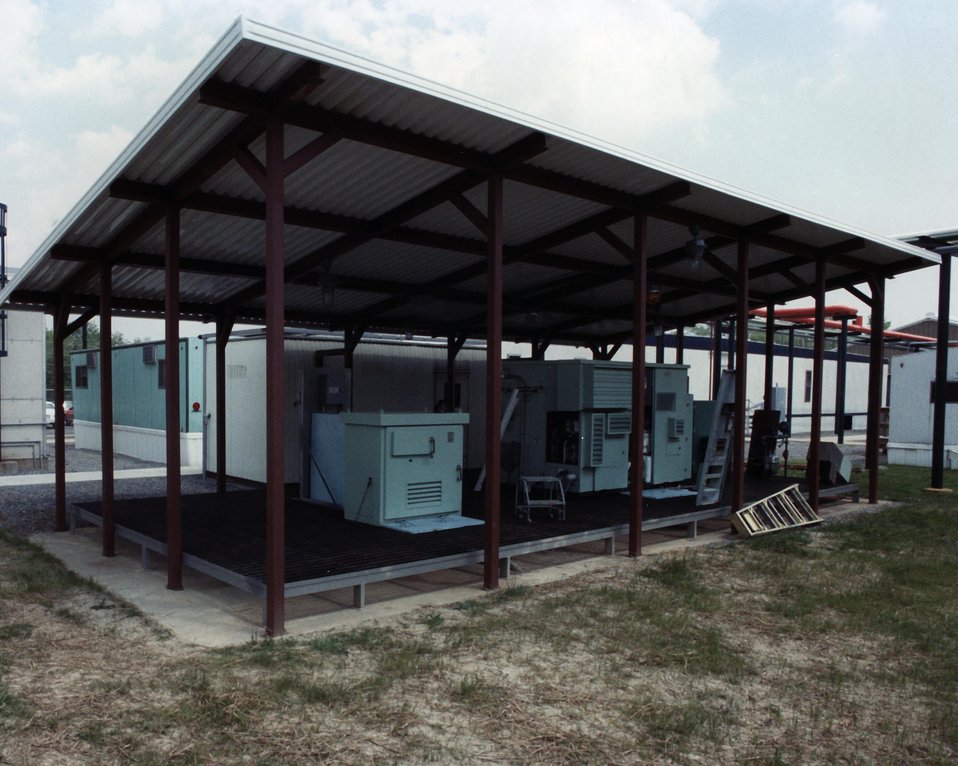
MORGAN TOWN FUEL CELL POWER UNIT.

THE NATIONAL ENERGY TECHNOLOGY LABORATORY IN WEST VIRGINIA HOUSES A DOE-SPONSORED FUEL CELL TEST UNIT. THE FUEL CELL UNIT IS ONE OF 46 NATURAL GAS-FIRED CELLS BUILT BY INTERNATIONAL FUEL CELLS CORP. THE TOOL-SHED SIZED POWER UNIT CAN PRODUCE UP TO 40 KILOWATTS OF ELECTRICITY. THE MORGANTOWN FUEL CELL UNIT OPERATES AS A 'COGENERATOR' OF BOTH HEAT AND ELECTRICITY. THE FUEL CELL CAN CONVERT NEARLY 80 PERCENT OF THE FUEL VALUE OF THE INCOMING NATURAL GAS INTO USABLE ENERGY - AN EFFICIENCY MORE THAN TWICE THAT OF A CONVENTIONAL COAL-BURNING PLANT. THE 11,000 POUND POWER PLANT IS OPERATED BY A STACK OF 270 INDIVIDUAL CELLS. EACH CELL USES AN ELECTROCHEMICAL PROCESS TO COMBINE HYDROGEN FROM THE NATURAL GAS WITH OXYGEN FROM THE AIR TO PRODUCE ELECTRICITY. STEAM IS PRODUCED AS A BYPRODUCT OF THE PROCESS. DIRECT CURRENT FROM THE POWER STATION IS CONVERTED INTO ALTERNATING CURRENT AND USED IN THE MORGANTOWN FACILITY'S OFFICE BUILDINGS.